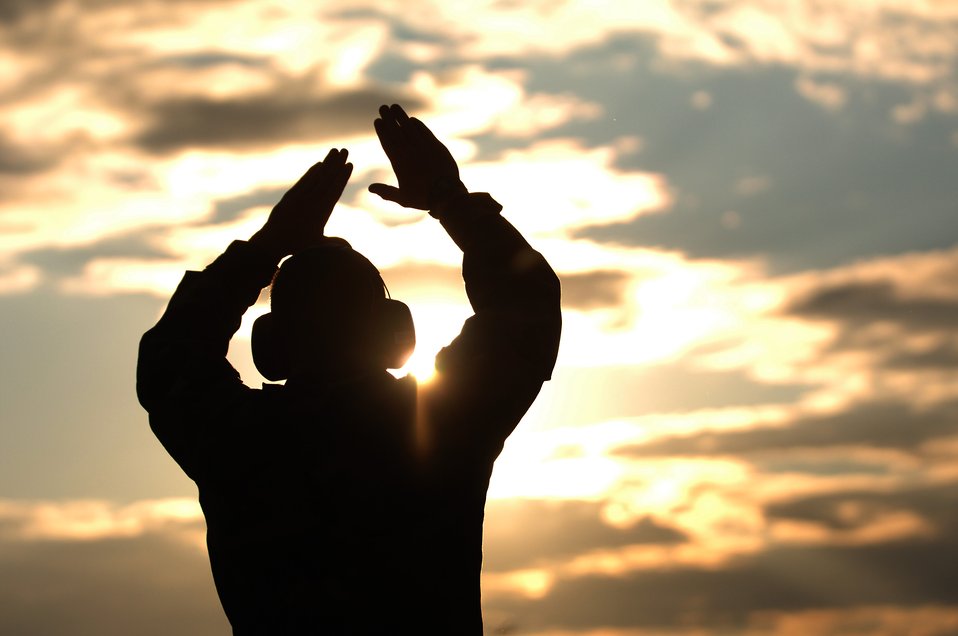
Vermont Guard returns

Tech. Sgt. Jason Guyette marshals in a Boeing 767 at Burlington International Airport in Burlington, Vt., on Thursday, June 15. Onboard were 60 Vermont Army National Guard members returning home after supporting Operation Iraqi Freedom for 17 months.